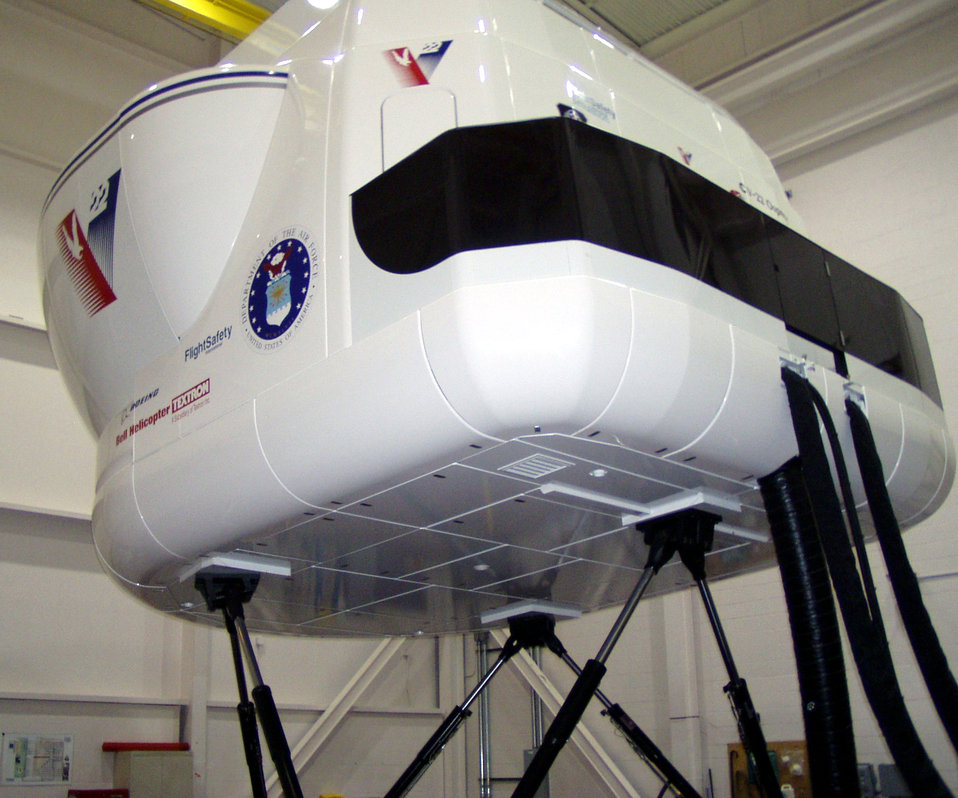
CV-22 Simulator

KIRTLAND AIR FORCE BASE, N.M. -- This full-motion CV-22 simulator is one of four that 58th Special Operations Wing instructors here will use to train aircrews beginning in 2005. The wing is scheduled to receive the aircraft in 2006.